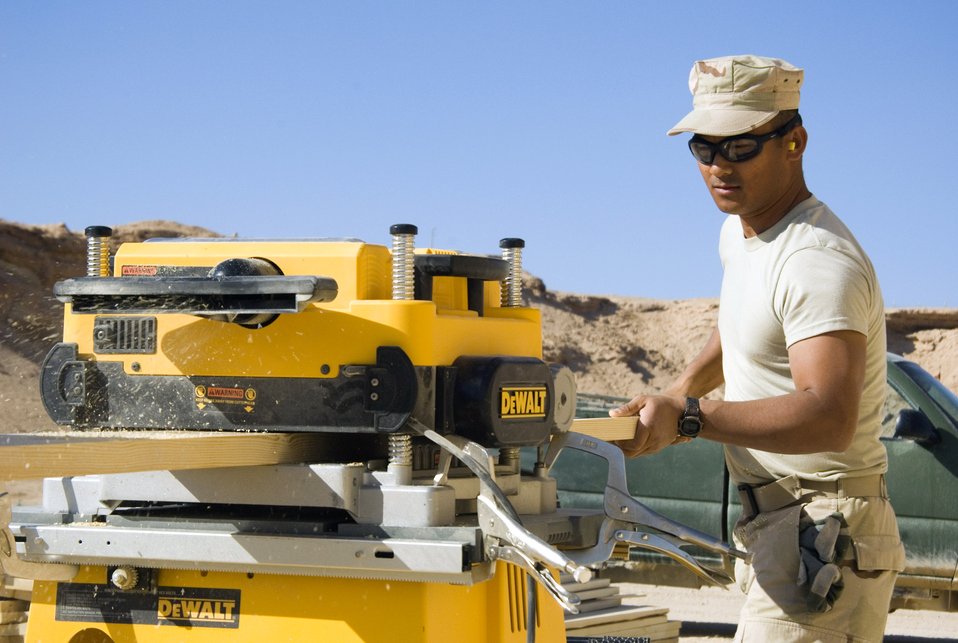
Air Force engineers improve Marine quality of life in Iraq

Staff Sgt. Rodvincent Abaya mills a 2-by-6 piece of wood for the door of a small-arms classroom for the Marines Nov. 23 at Al Asad Air Base, Iraq. Sergeant Abaya, a 557th Expeditionary REDHORSE structures technician, is deployed from McGuire Air Force Base, N.J.